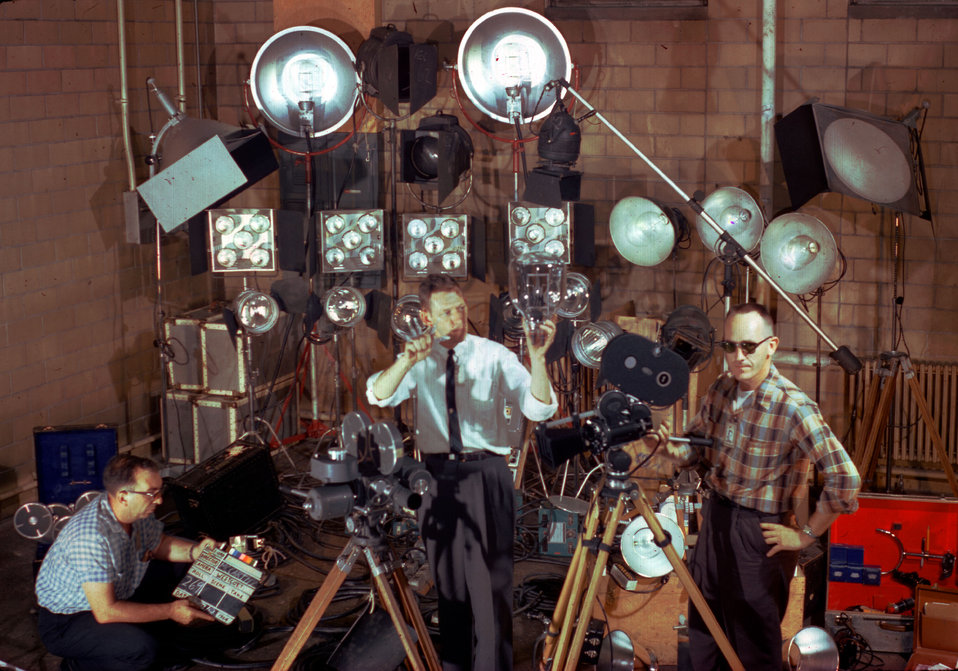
Ed Westcott with equipment and two assistants

Bld. 2714 in in Oak Ridge Tennessee 1960